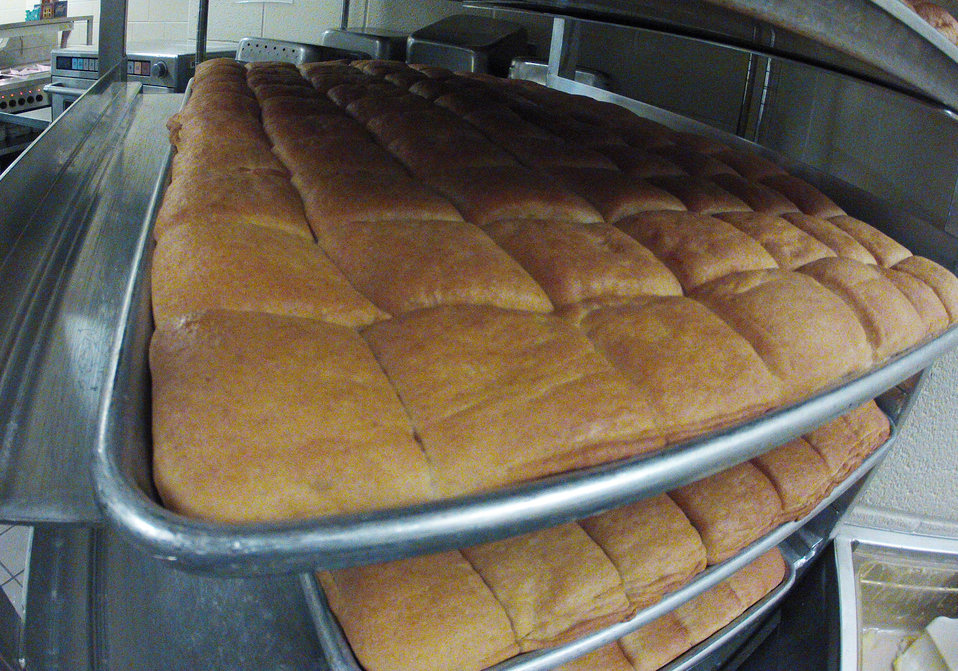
School lunch staff and students enjoy the new school lunch menu created to meet the new standards at the Yorkshire Elementary School in Manassas, VA on Friday, Sept. 7, 2012.